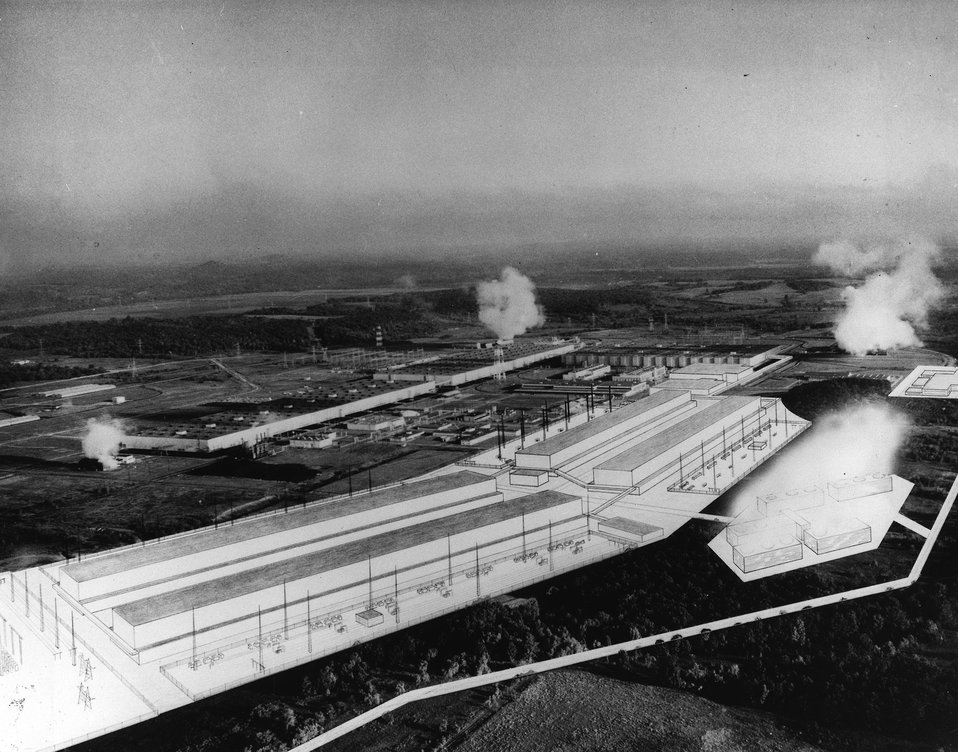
Shown at the present Energy Research and Development Administration's Gaseous Diffusion Plant at Portsmouth, Ohio, with the planned addition sketched in the foreground. The add-on will double the facility's enrichment capacity. c. 1977